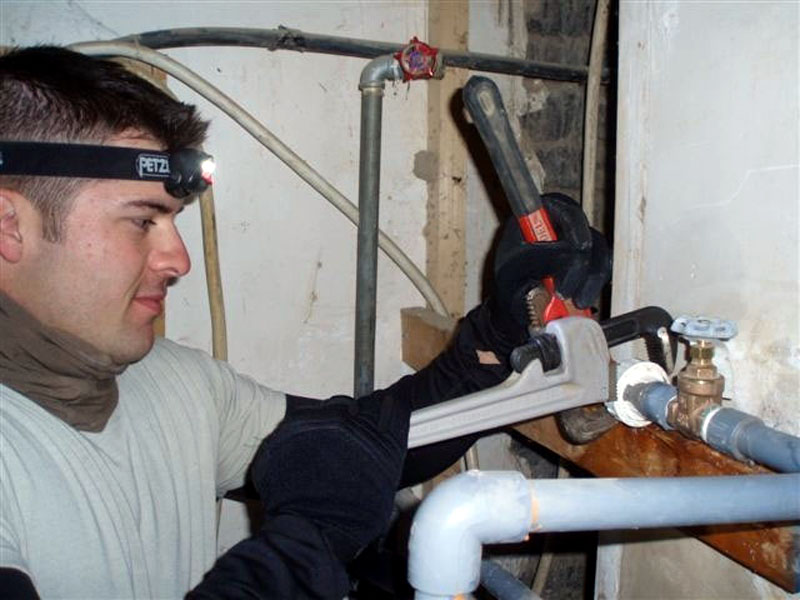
Balad Airmen help improve quality of life for Soldiers in Iraq

Staff Sgt. Caleb Dennis fixes a pipe leak Jan. 11 at Patrol Base Olson, Iraq. Sergeant Dennis, a 732nd Expeditionary Civil Engineer Squadron Det. 6 fuels technician, is deployed from Kadena Air Base, Japan.